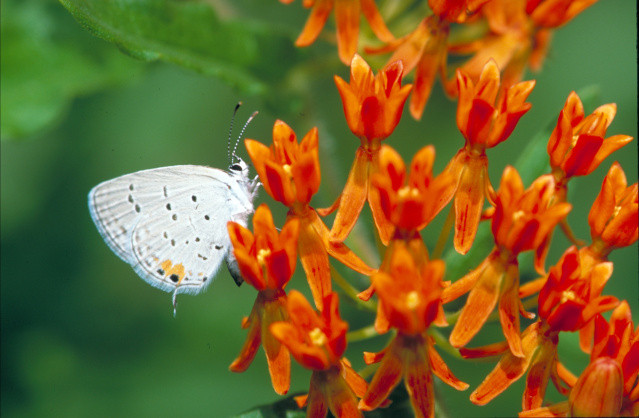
eastern tailed-blue butterfly on butterfly weed